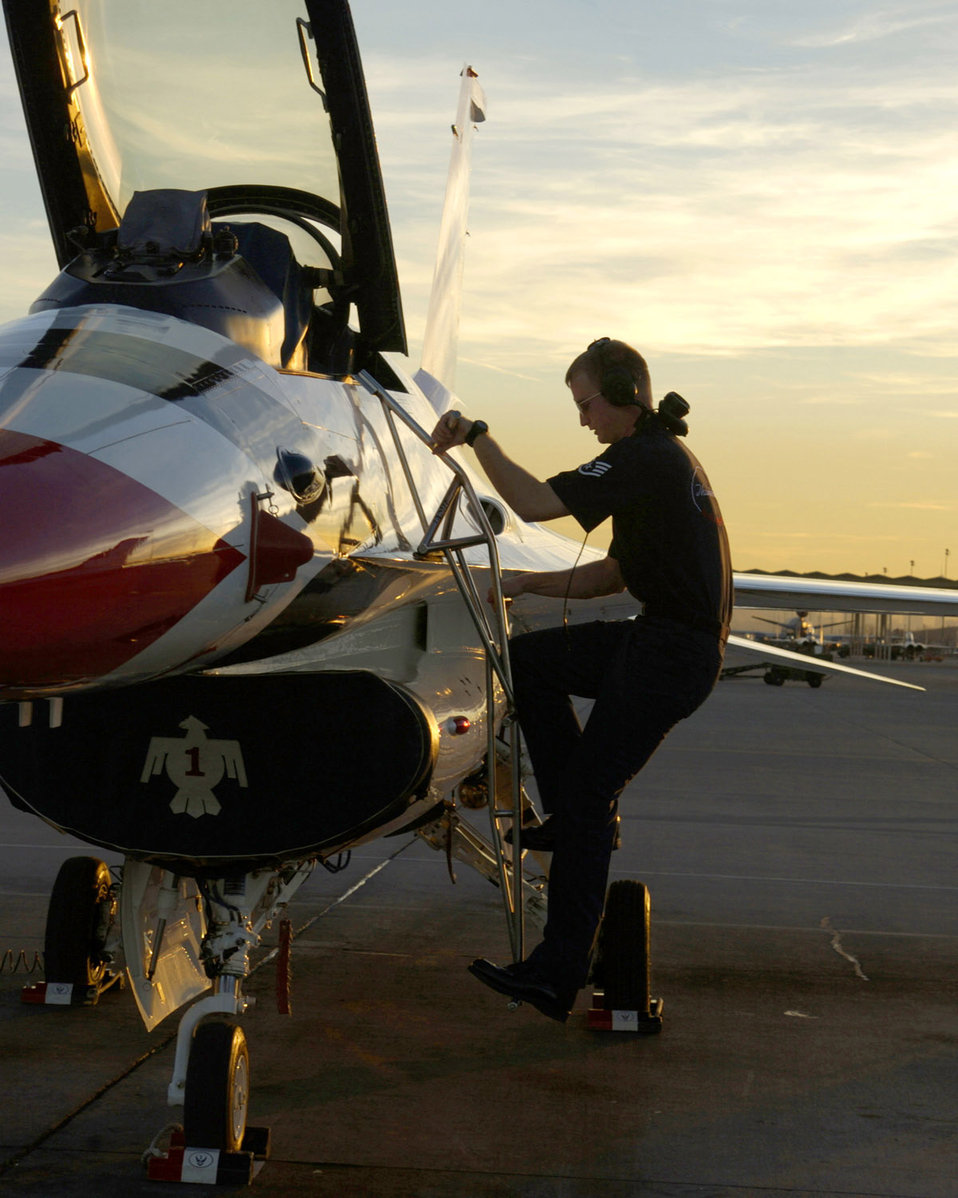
Finishing touches

NELLIS AIR FORCE BASE, Nev. -- Staff Sgt. Jeremy Curby, a Thunderbirds crew chief, prepares an F-16 Fighting Falcon cockpit before an early morning practice flight.